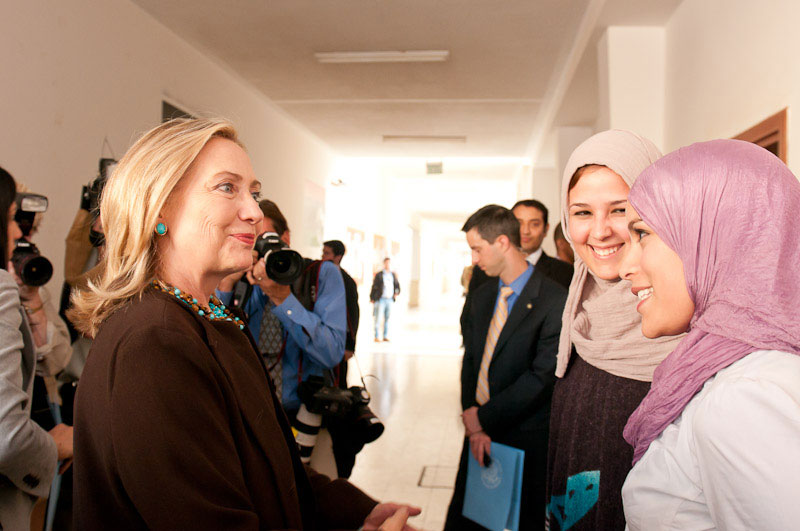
Secretary Clinton Speaks With Two Members of the Voices of Libyan Women Organization

U.S. Secretary of State Hillary Rodham Clinton greets two members of the Voices of Libyan Women organization at Tripoli University in Tripoli, Libya, on October 18, 2011.